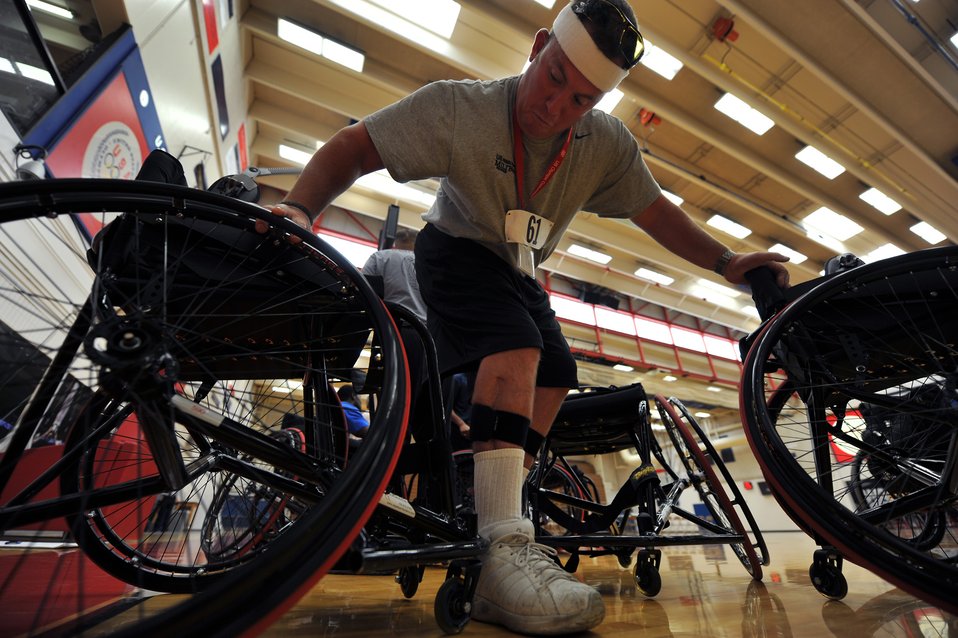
Warrior Games

Staff Sgt. Richard Pollock II moves into his wheelchair as he prepares to practice basketball May 10, 2010, at the Olympic Training Center in Colorado Springs, Colo. Sergeant Pollock is a member of the Air Force wheelchair basketball team. Teams from the Air Force, Army, Navy, Marines and Coast Guard are participating in the inaugural Warrior Games which begin May 10 and finish May 14.